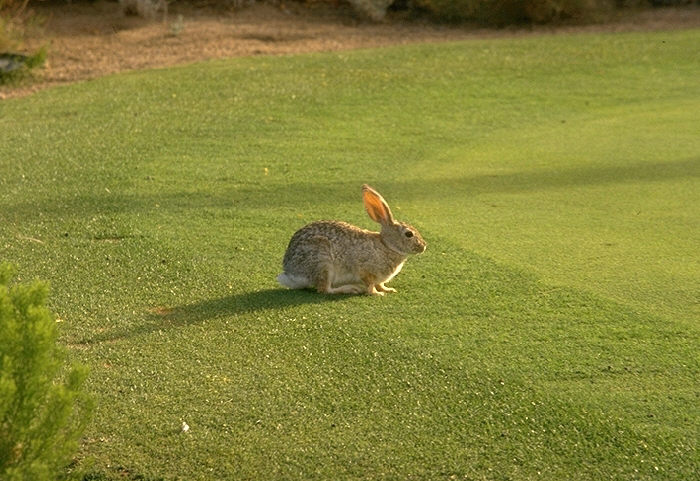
Rabbit on golf practice green, The Boulders, Carefree, Arizona.